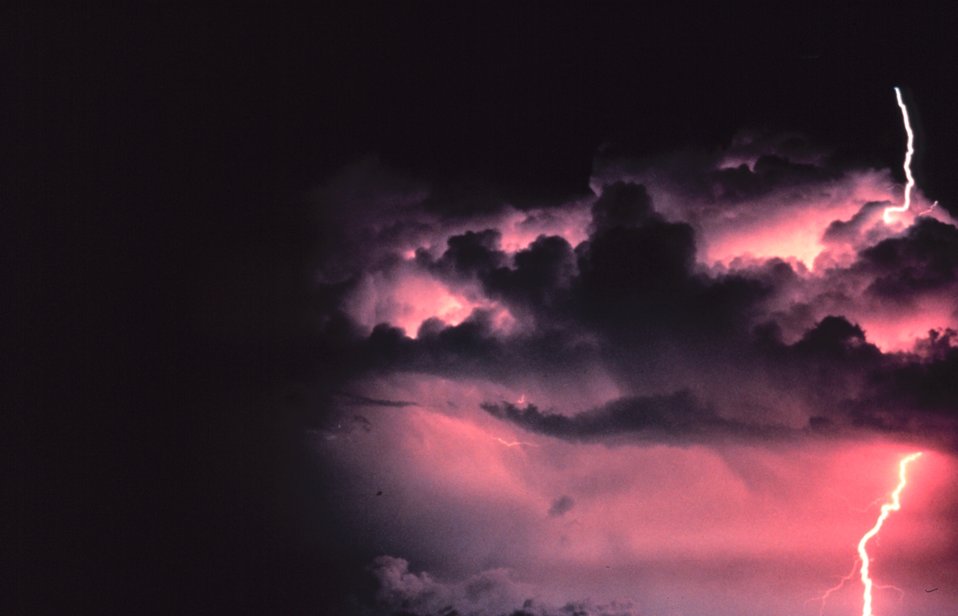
A cloud-to-ground lightning stroke originating from higher based cloud structure . Lightning stroke penetrates a low level cloud before reaching earth.